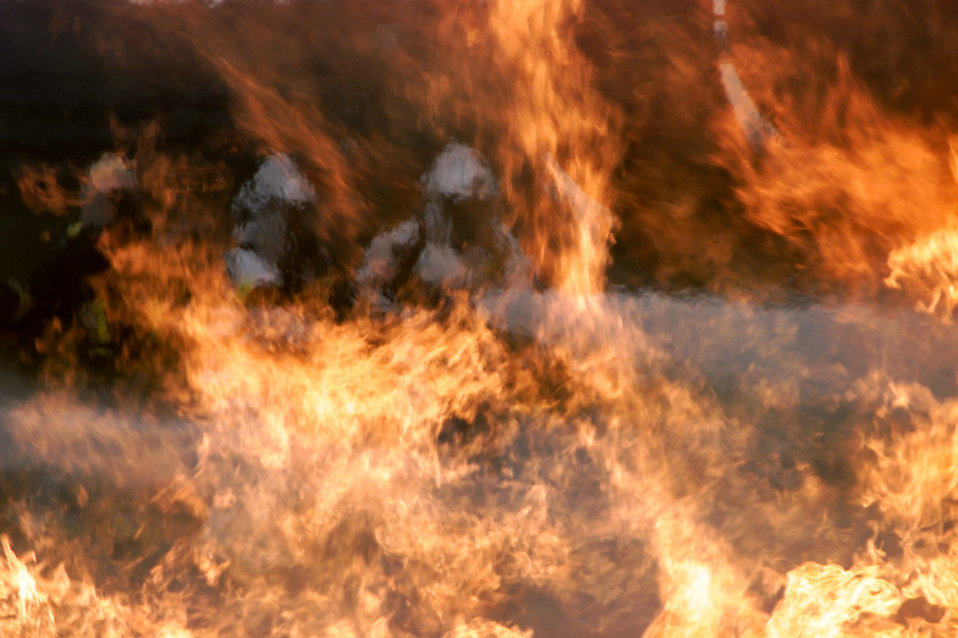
Training in flames

RHEIN-MAIN AIR BASE, Germany -- Senior Airman Jason Tucker (left) and Airman 1st Class Jayson Conroy practice extinguishing a fuel-spill fire at the Frankfurt International Airport fire training area here Aug. 24. The training gives the firefighters skills needed to fight an aircraft fire. The Airmen are assigned to the 469th Air Base Group's civil engineer flight.